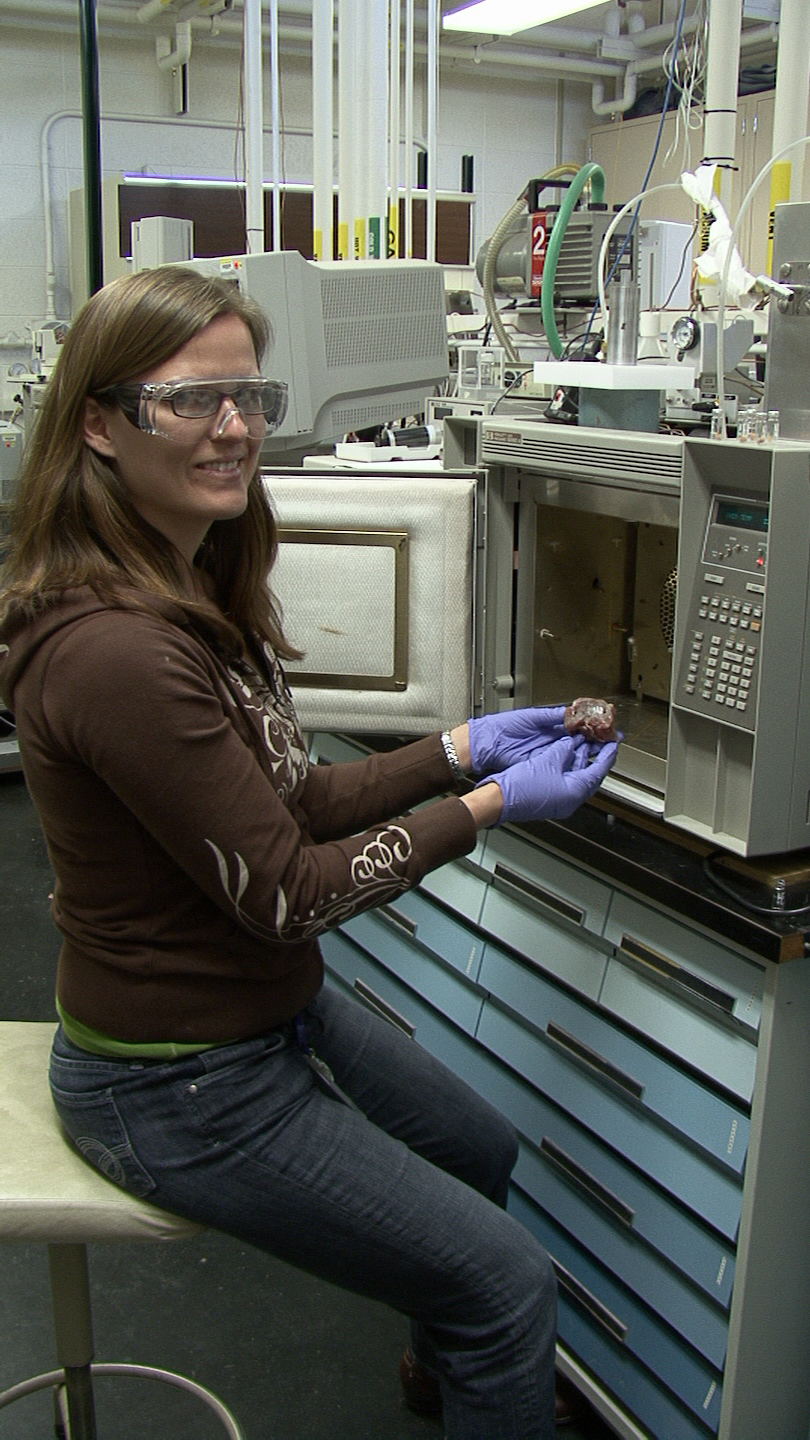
Perishable Foods

Tara Lovestead prepares a sample of meat (by excising a few milligrams) for testing with a new sampling method developed by NIST researcher Tom Bruno that can detect trace amounts of low volatility compounds produced when perishable foods such as chicken begins to spoil.